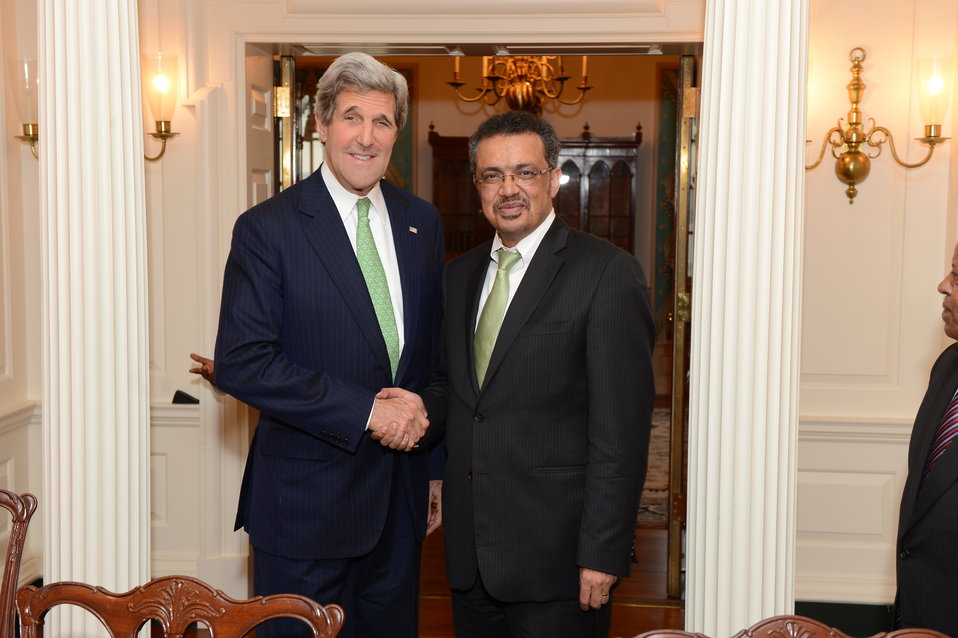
Secretary Kerry Meets With Ethiopian Foreign Minister Adhanom

U.S. Secretary of State John Kerry meets with Ethiopian Foreign Minister Tedros Adhanom at the U.S. Department of State in Washington, D.C., on April 30, 2013.